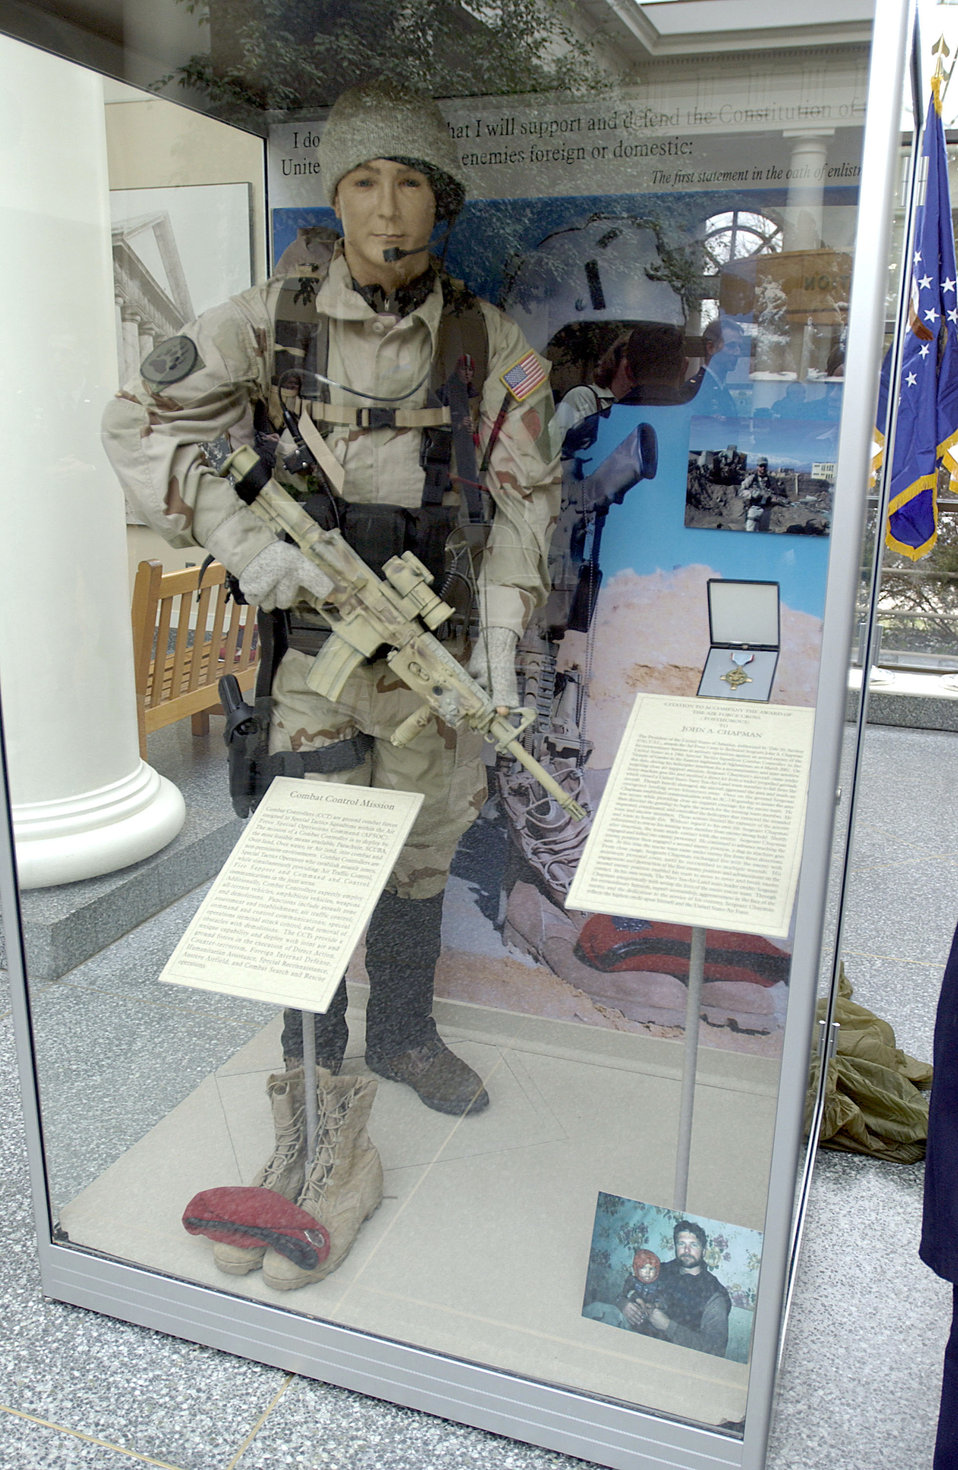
Unveiling ceremony

WASHINGTON -- Air Force Secretary Dr. James G. Roche unveiled a memorial at Arlington National Cemetery on Jan.8 to honor Tech. Sgt. John A. Chapman who was killed March 4, 2002, while fighting against the Taliban during Operation Anaconda in Afghanistan. He was posthumously decorated with the nation's second-highest award for valor, the Air Force Cross.